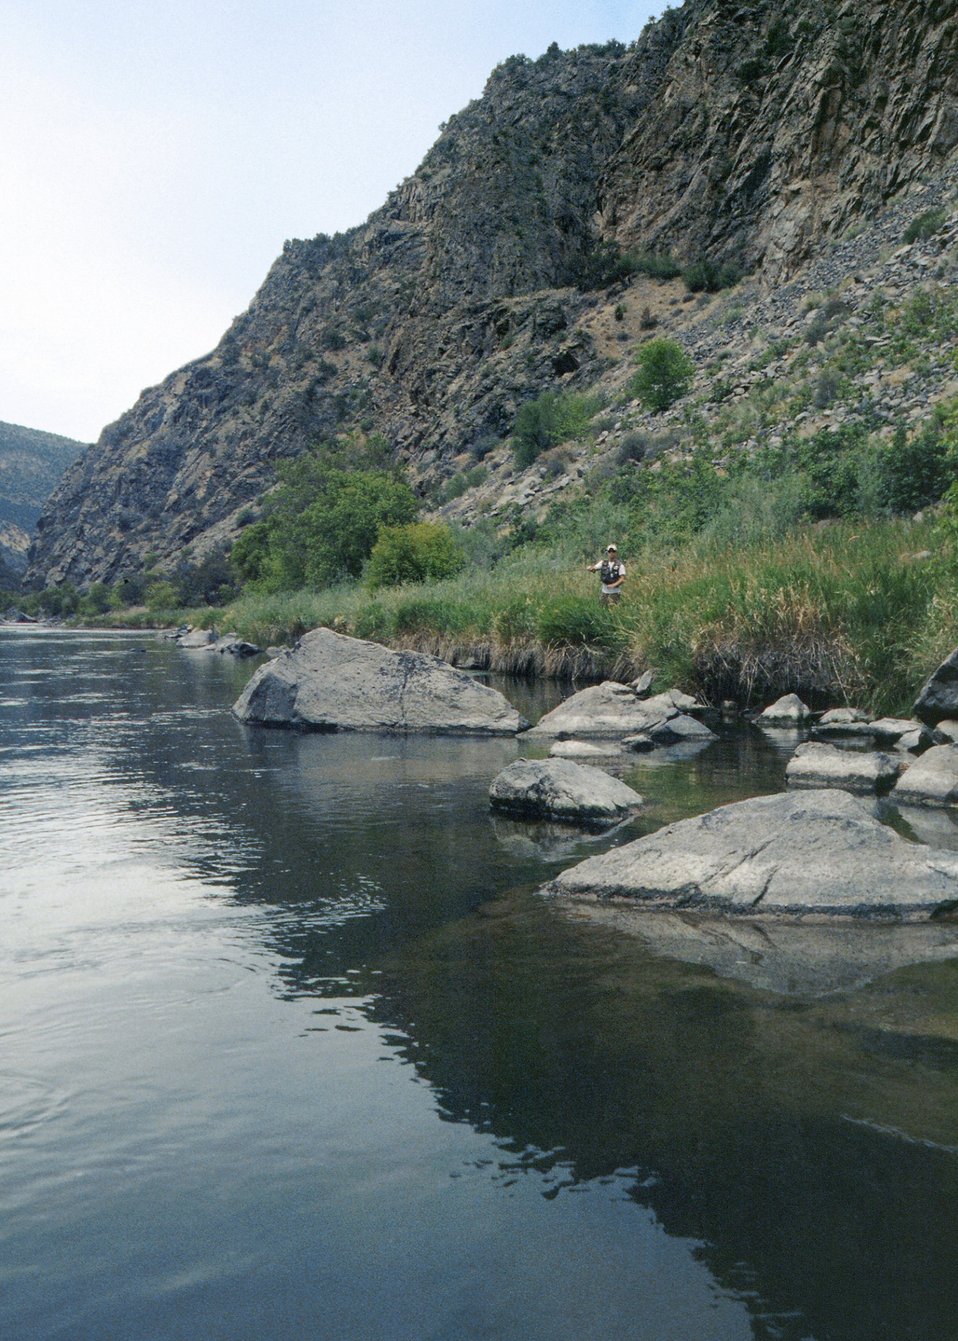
Rafting